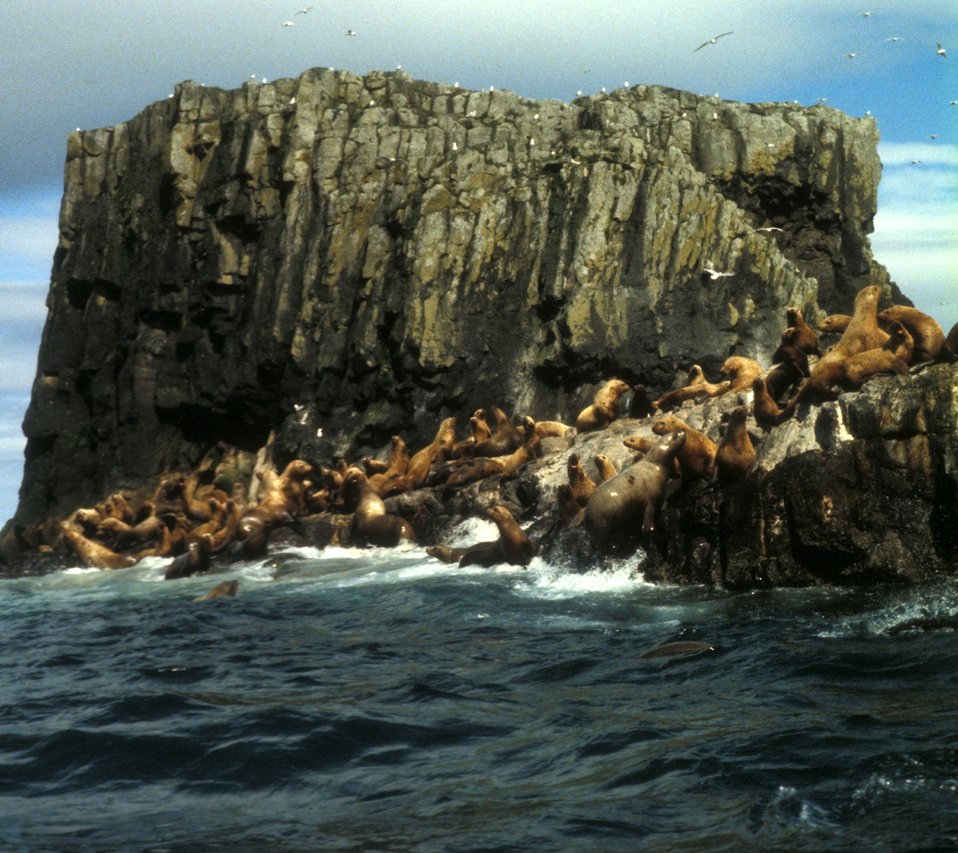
Steller seals, Alaska Maritime NWR

Steller sea lions haul out at the Aiugunak Pinnacles in the Alaska Maritime National Wildlife Refuge (http://alaska.fws.gov/nwr/akmar/index.htm).